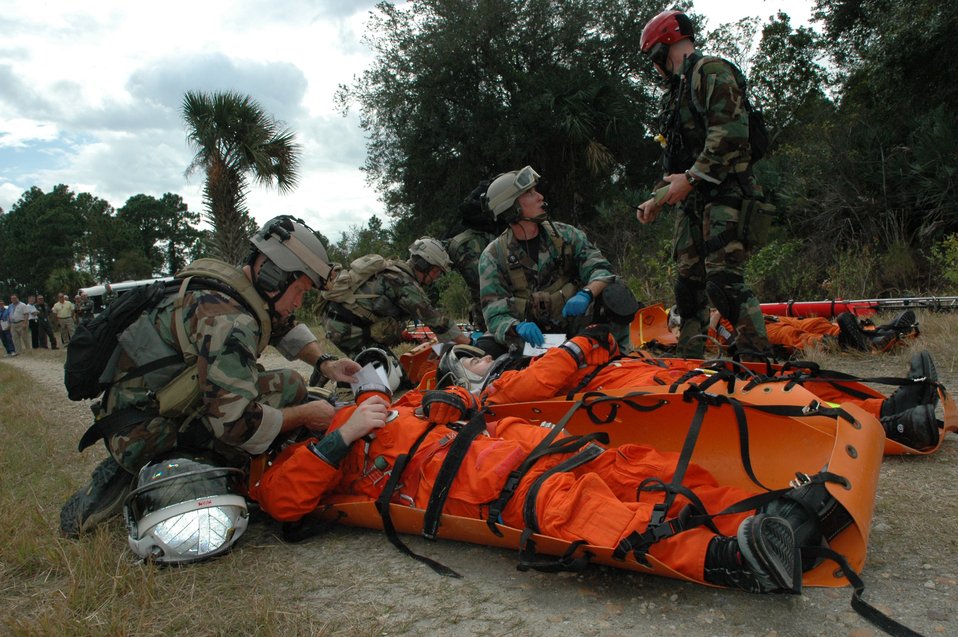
NASA exercise tests rescue wing skills

920th Rescue Wing pararescuemen treat astronauts' injuries in a Mode 7 Exercise simulated orbiter crash at Cape Canaveral Air Force Station, Fla. Feb. 13. The exercise allowed rescue workers to train in egress and encompassed NASA, the 45th Space Wing and Air Force Reserve's 920th RQW, both at Patrick Air Force Base.